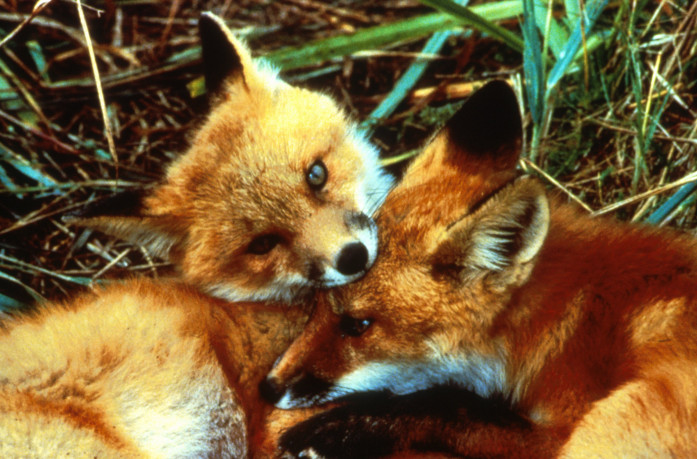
red fox kits